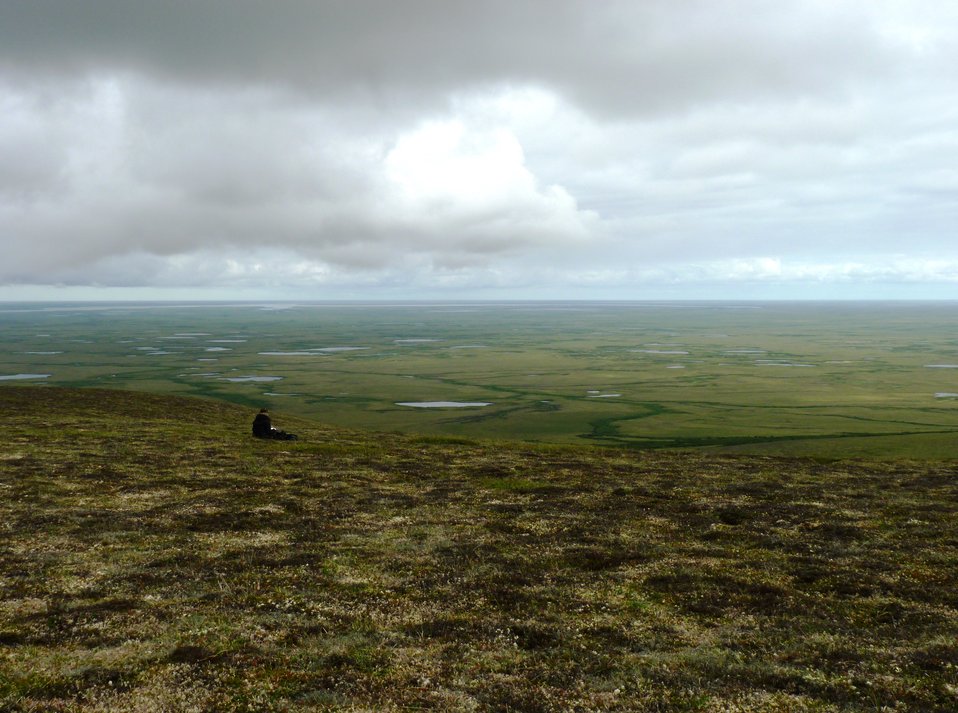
Andreafsky Wilderness, Yukon Delta National Wildlife Refuge